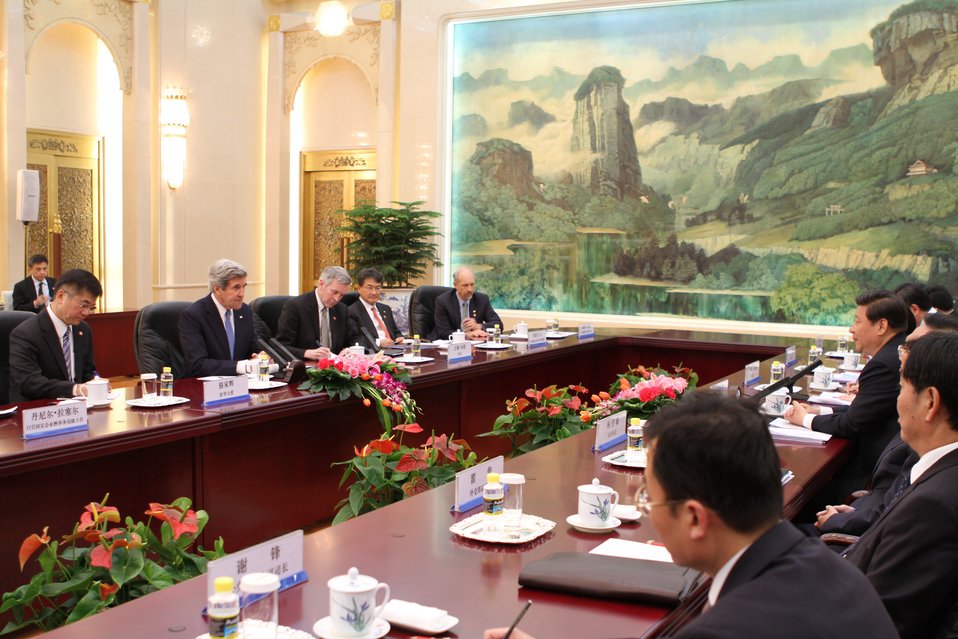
Secretary Kerry Meets with Chinese President Xi Jinping

U.S. Secretary of State John Kerry meets with Chinese President Xi Jinping at the Great Hall of the People in Beijing, China, on April 13, 2013.